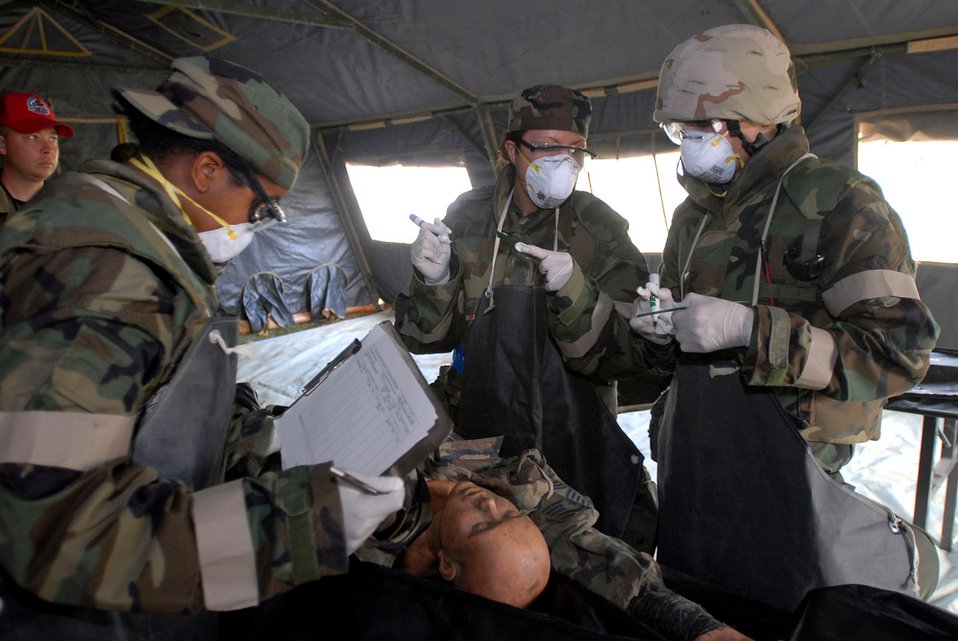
Airmen practice runway repair, RAAF airmen observe, take ideas home

Airman 1st Class Connecticut Wilson (left), Staff Sgt. Joanne Richards and Airman 1st Class Darrin Wagner, 36th Services Squadron, process a simulated deceased person's information for the mortuary affairs portion of an exercise at Kadena Air Base, Japan, Nov. 16. Approximately 110 personnel, most from Andersen Air Force Base, Guam, attended the Det. 1, 554th Rapid Engineer Deployable Heavy Operational Repair Squadron Engineer Silver Flag exercise here.